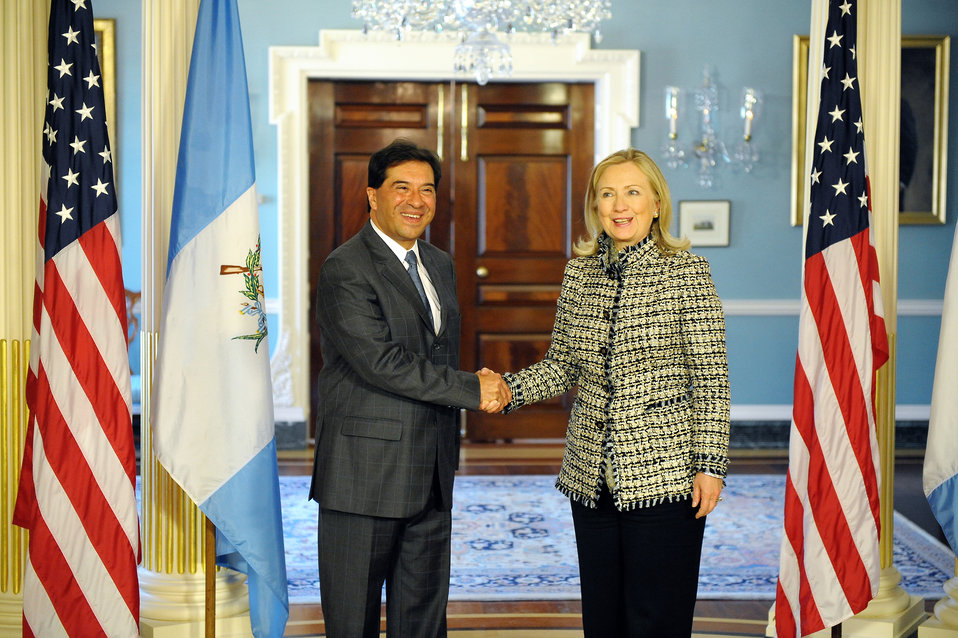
Secretary Clinton Shakes Hands With Guatemalan Foreign Minister Foreign Minister Caballeros

U.S. Secretary of State Hillary Rodham Clinton shakes hands with Guatemalan Foreign Minister Harold Caballeros after their bilateral meeting at the U.S. Department of State in Washington, D.C., on February 21, 2012.